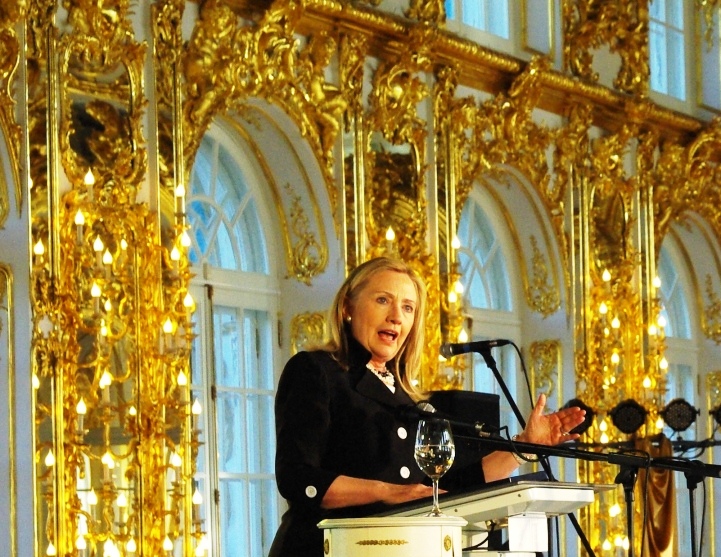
Secretary Clinton Addresses the APEC Women and the Economy Reception

U.S. Secretary of State Hillary Rodham Clinton addresses the APEC – Women and the Economy Forum reception at the Catherine Palace in Pushkin, near St. Petersburg, Russia, on June 29, 2012.